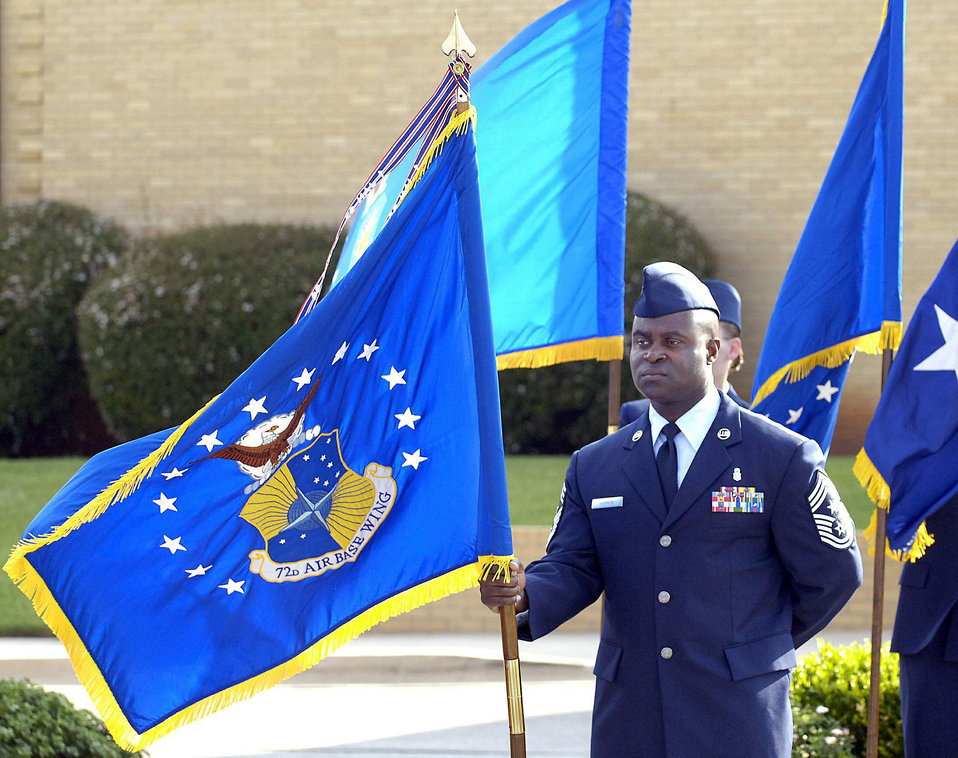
Change of command

Chief Master Sgt. Eric Harmon, the 72nd Air Base Wing command chief, holds the wing guideon during Col. Allen Jamerson's assumption of command ceremony July 18 of the wing at Tinker Air Force Base, Okla. The wing has African Americans currently serving in its top three leadership positions.